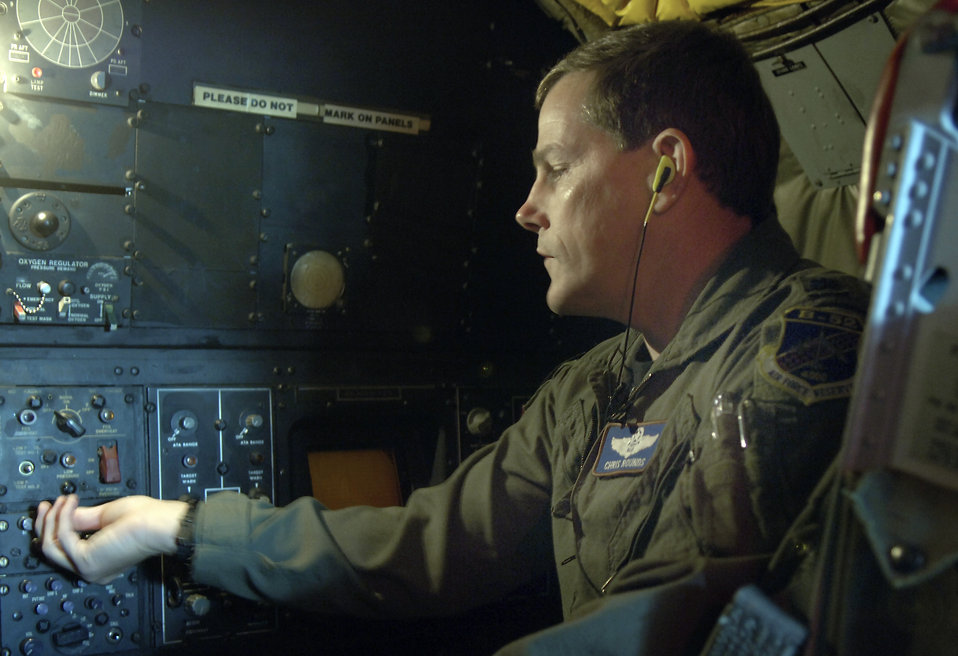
Can you hear me now?

BARKSDALE AIR FORCE BASE, La. (AFPN) -- Lt. Col. Chris Rounds turns down the volume on his radio before takeoff. The colonel said he does not need as much volume as before due to the Air Force's newly approved attenuating custom communications earpiece system, or ACCES. Each earpiece is custom-fit to the individual's ear canal and contains a built-in speaker. When connected to an aircraft's communication system, it helps to enhance radio fidelity. The system also reduces ambient noise, increases situational awareness and protects against potential hearing loss. Colonel Rounds is assigned to the 93rd Bomb Squadron.